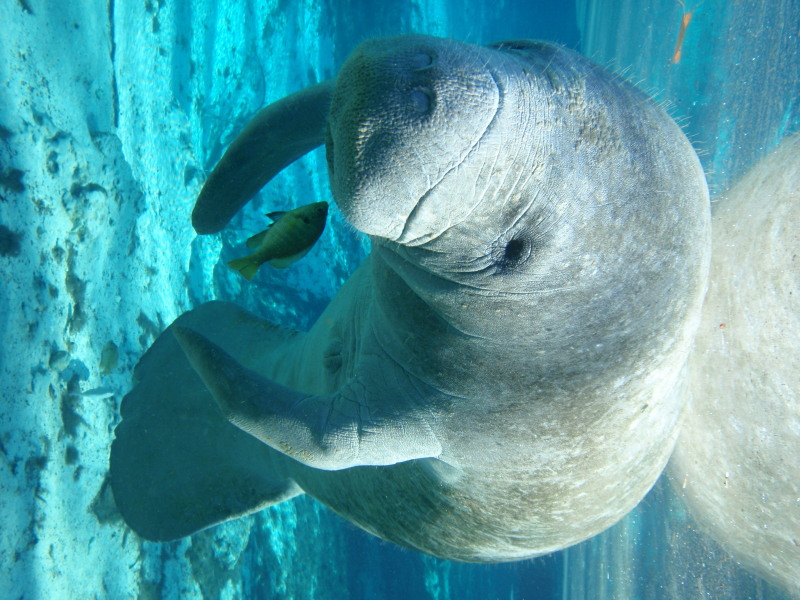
Endangered Florida manatee (Trichechus manatus)

Photo credit: Tracy Colson

The Crystal River National Wildlife Refuge, was established in 1983 specifically for the protection of the endangered West Indian Manatee. This unique refuge preserves the last unspoiled and undeveloped habitat in Kings Bay, which forms the headwaters of the Crystal River. The refuge preserves the warm water spring havens, which provide critical habitat for the manatee populations that migrate here each winter.